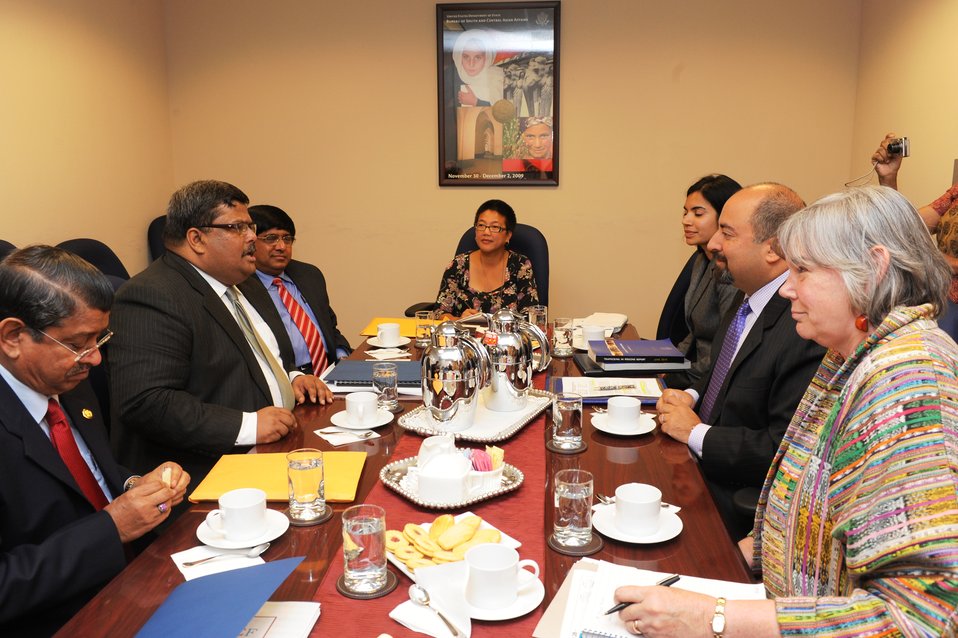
Bureau of South and Central Asian Affairs Representatives Meet With Bangladeshi Foreign Secretary Mijarul Quayes

Representatives of the U.S. Department of State’s Bureau of South and Central Asian Affairs meet with Bangladeshi Foreign Secretary Mijarul Quayes at the U.S. Department of State in Washington, D.C., on June 29, 2010.